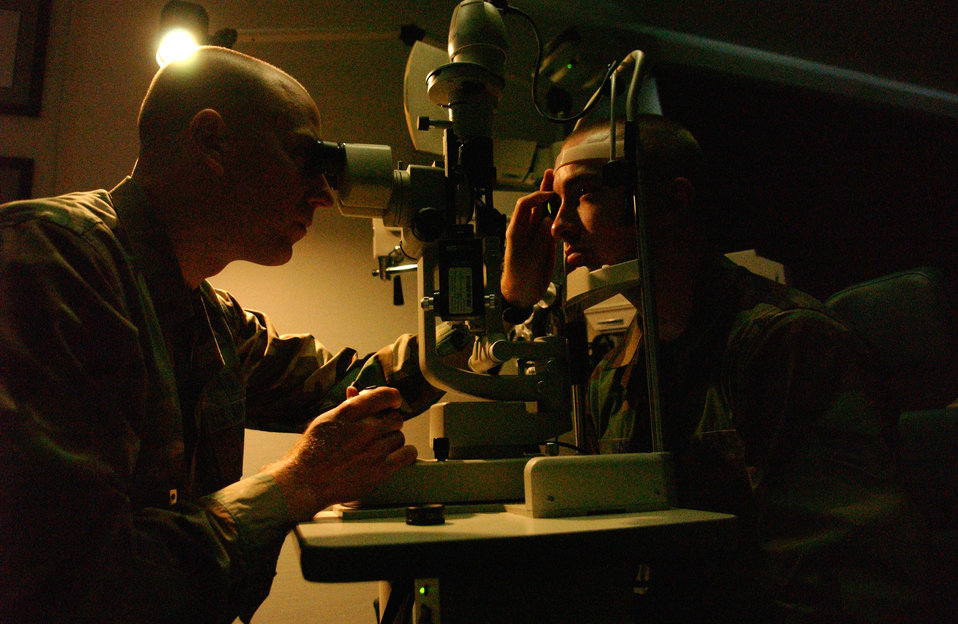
Eye checkup

Maj. Scott McKim examines Senior Airman Robert Minor's eyes. Major McKim is an optometrist with the 435th Aerospace Medicine Squadron at Ramstein Air Base, Germany. Airman Minor is assigned to the 435th Logistic Readiness Squadron.